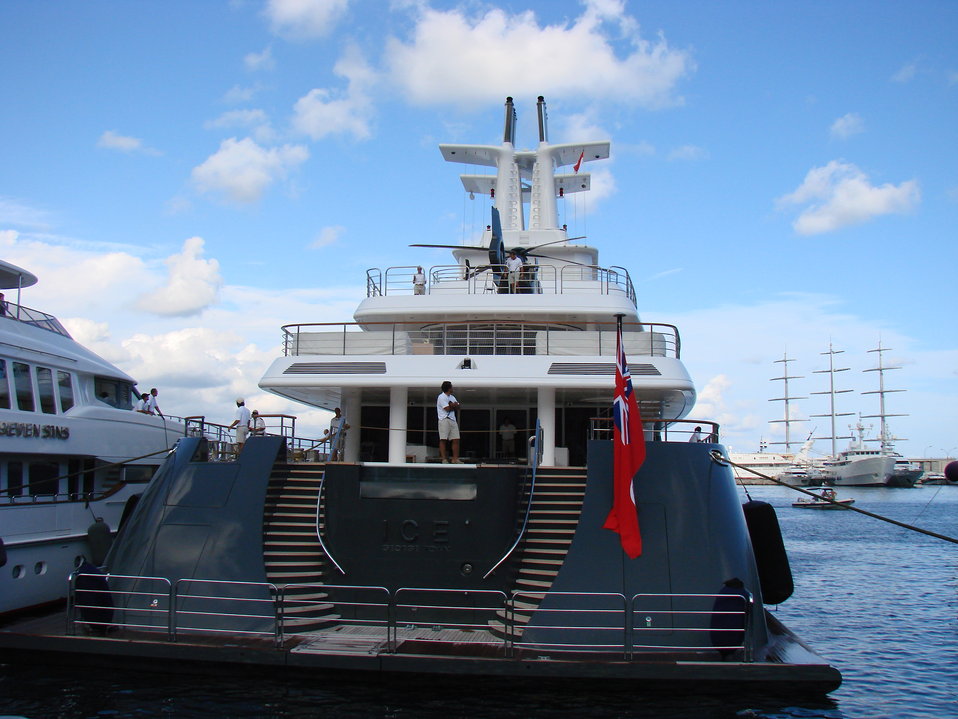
Ice Yacht